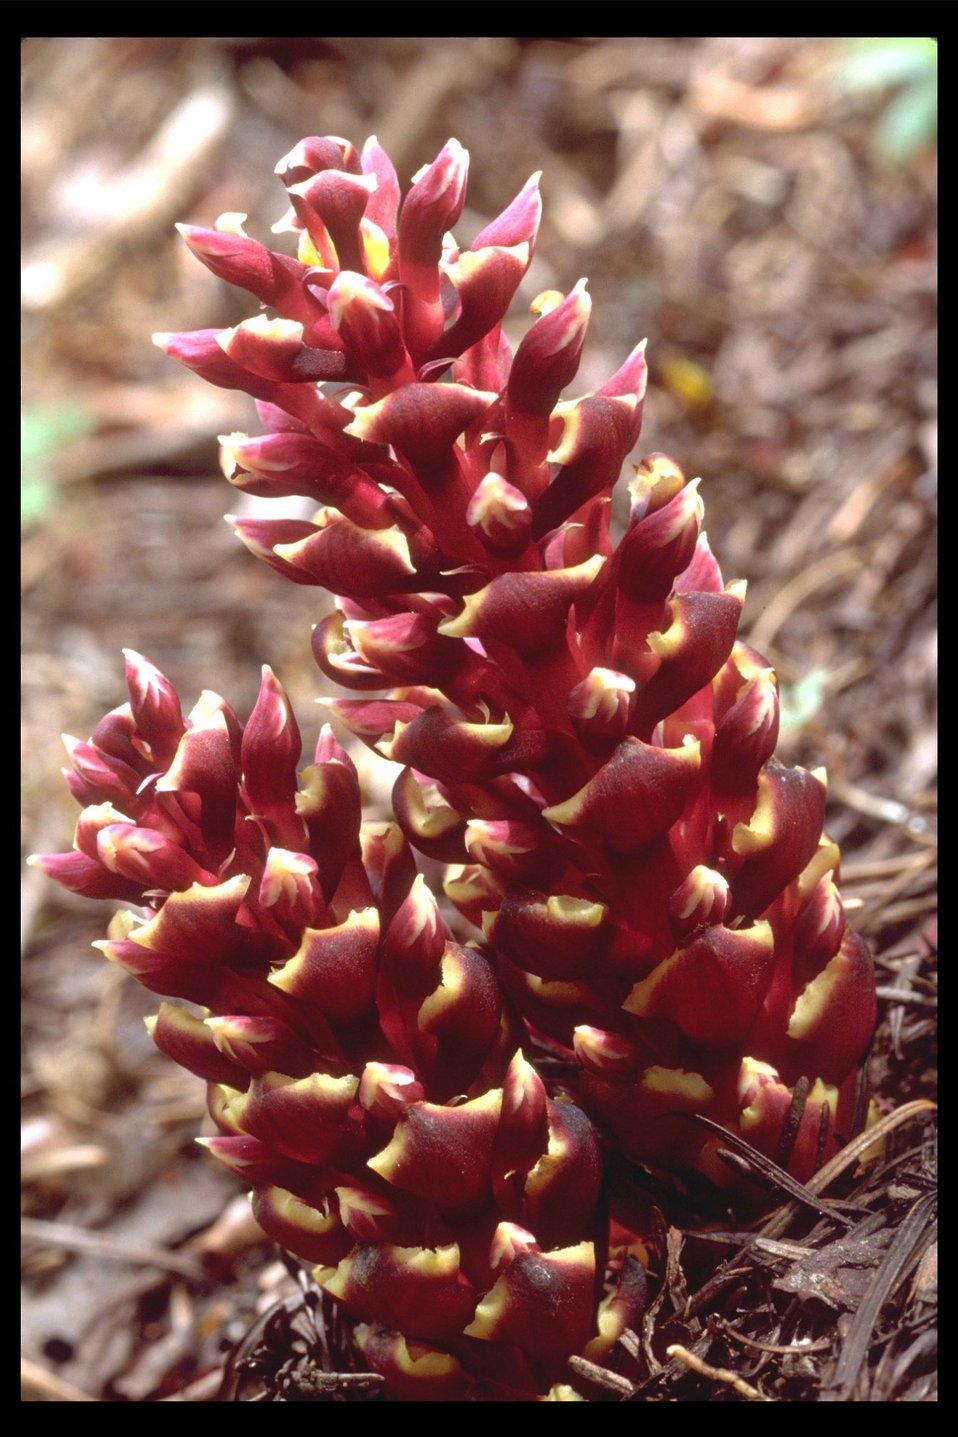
California Ground-Cone (Boschiakia strobilacea) near Lost Creek Lake.